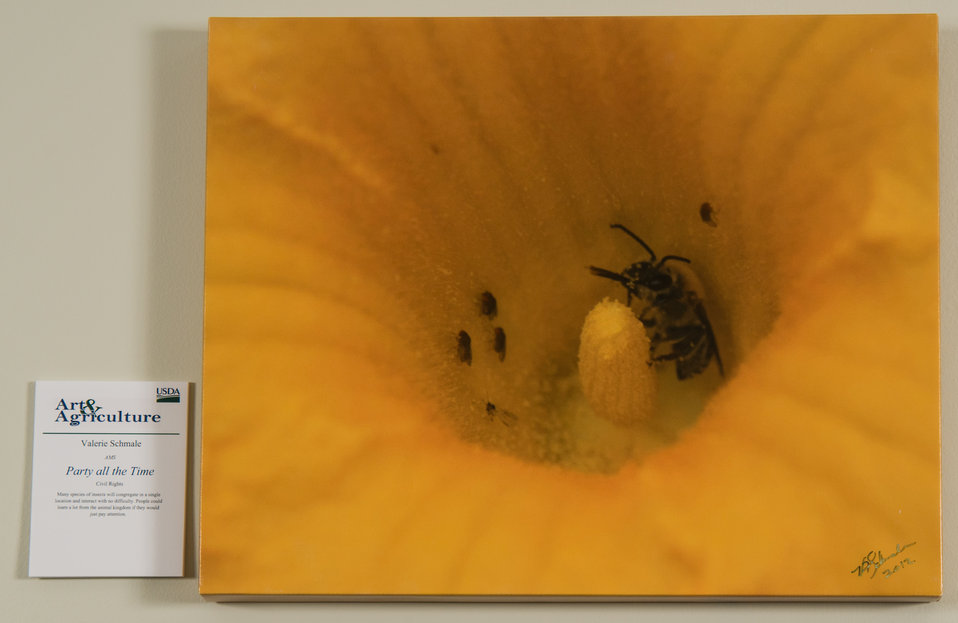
Online Viewer's Choice entries of the 2013 Art & Agriculture, Tuesday, July 9, 2013, in the South Building, Washington, D.C. Themes were expressed by employees from across the department and the contest was open to full-time and part-time USDA employees. Winning artwork will be displayed till the end of the year. U.S. Artistic expression is a creative outlet that is vital for an individual to grow and develop.